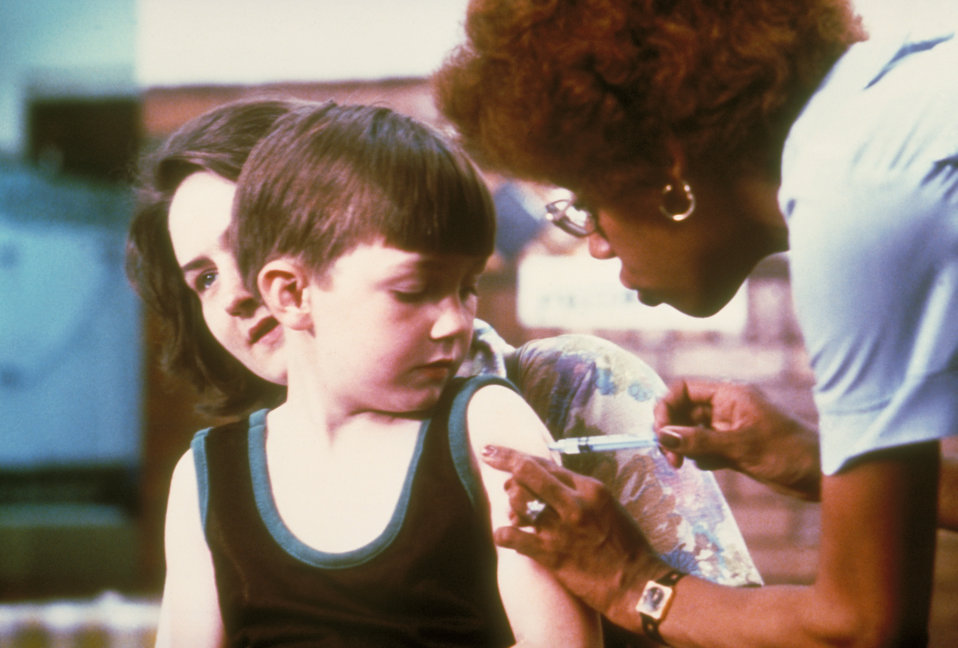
Nurse vaccinating child.